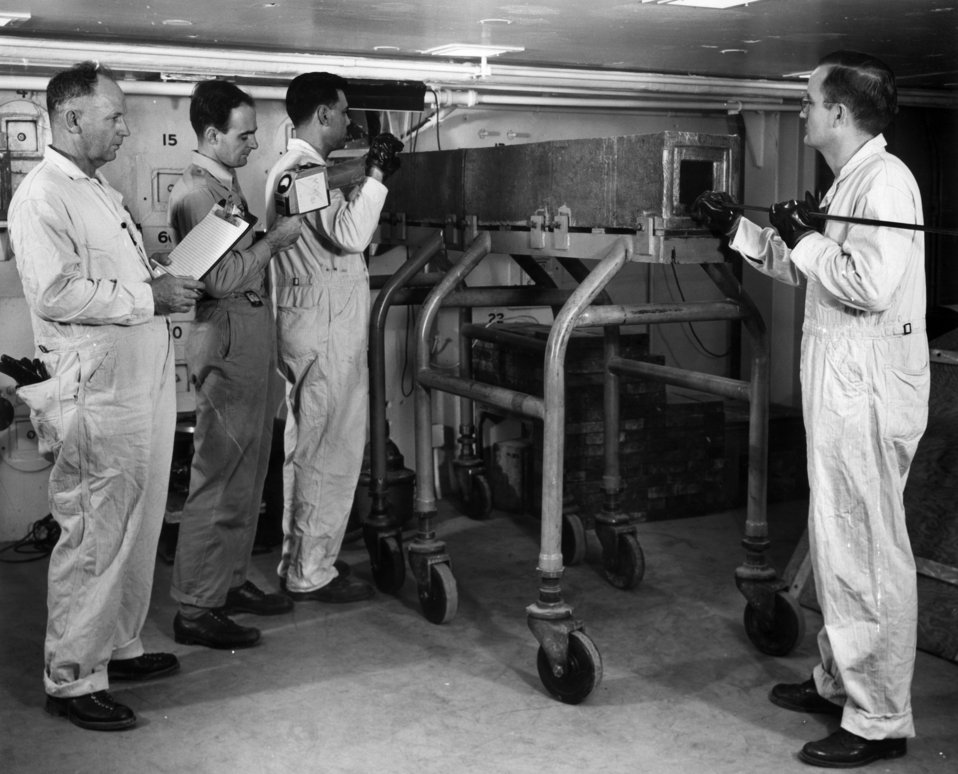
Removing Radioactive Material from Atomic Pile ORNL

5793 ORNL photo Fred Williams Oak Ridge Tennessee